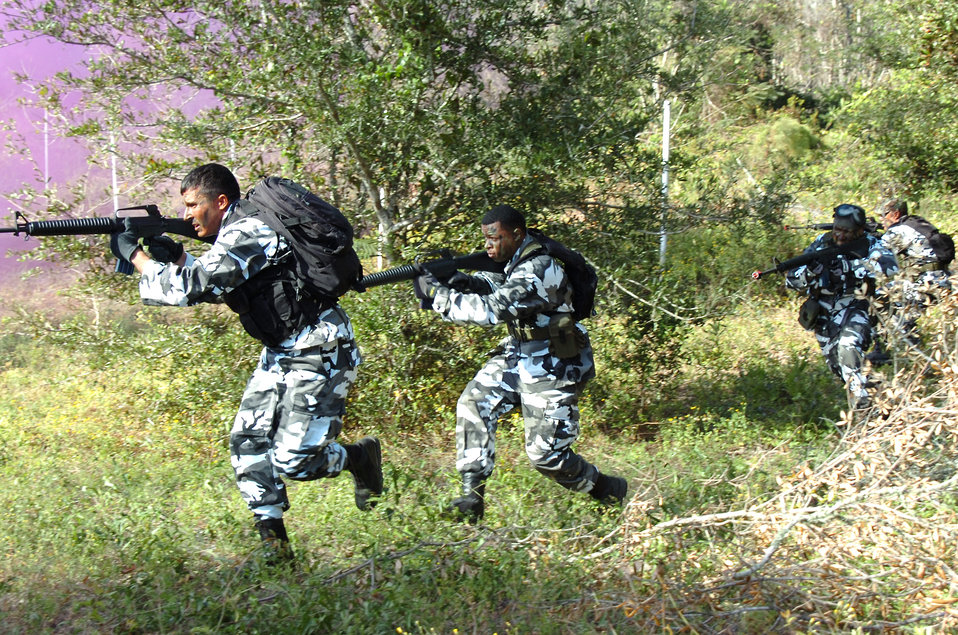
Mock attack

EGLIN AIR FORCE BASE, Fla. -- Staff Sgt. Jason Libman and Senior Airman Renaldo Miller lead an